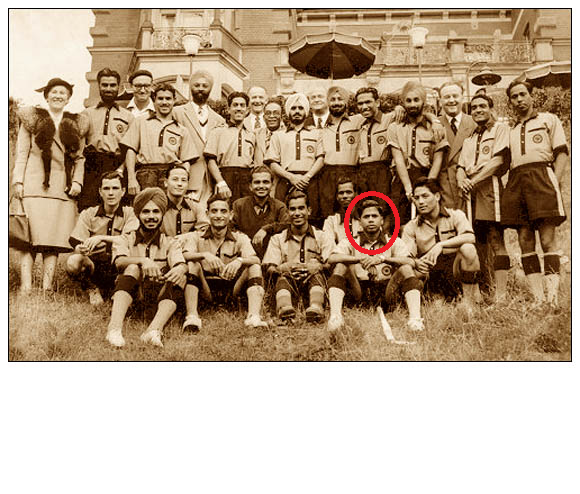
1952 Summer Olympics, Helsinki - Indian hockey Team